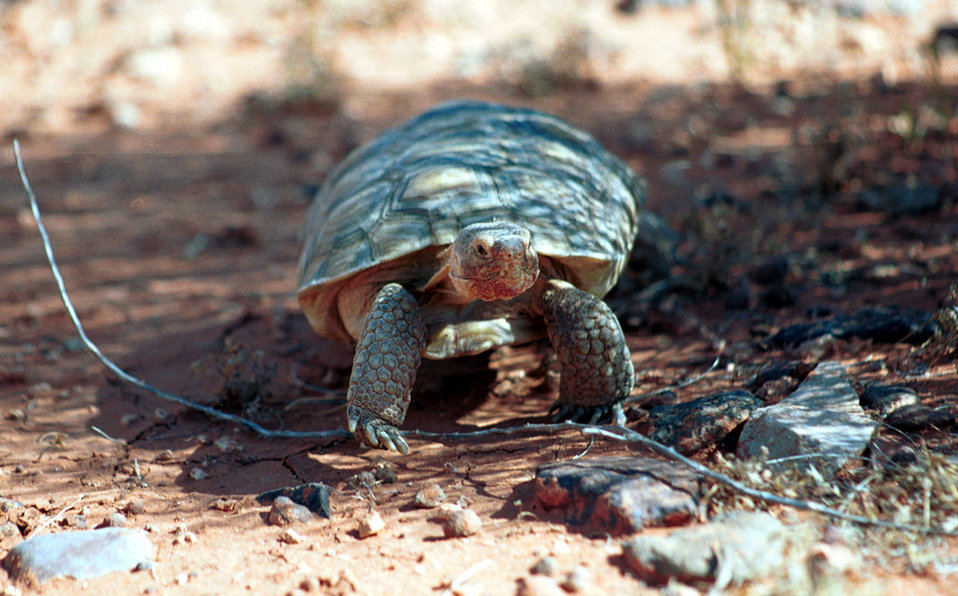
Desert Tortoise